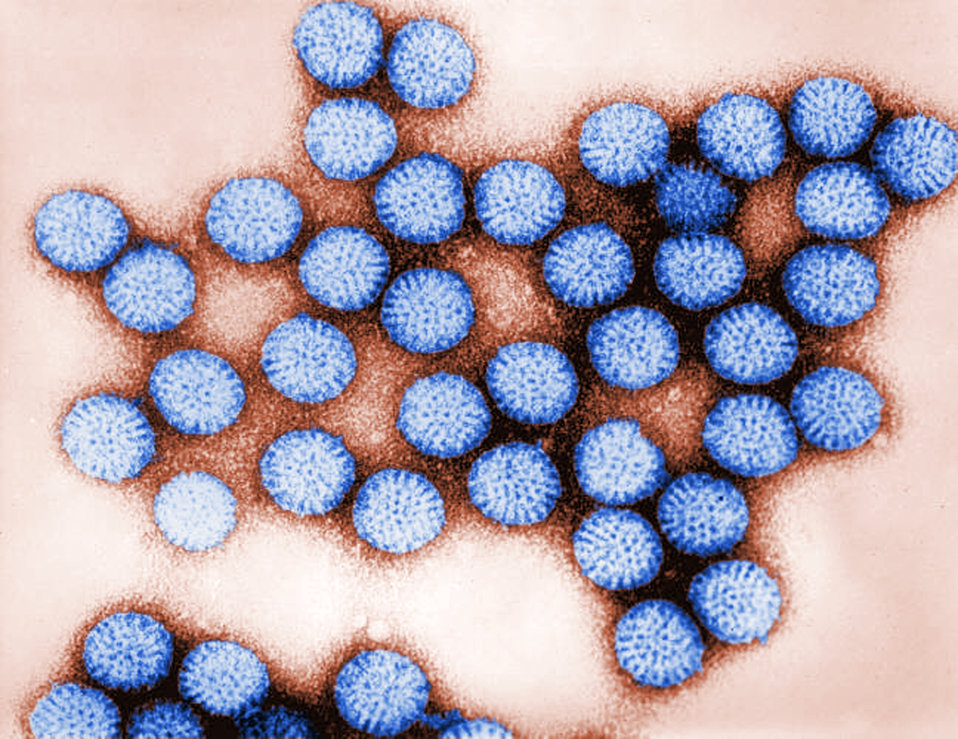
This transmission electron micrograph (TEM) revealed some of the ultrastructural morphology of a number of intact rotavirus double-shelled particles. See PHIL 273 for a black and white version of this image.